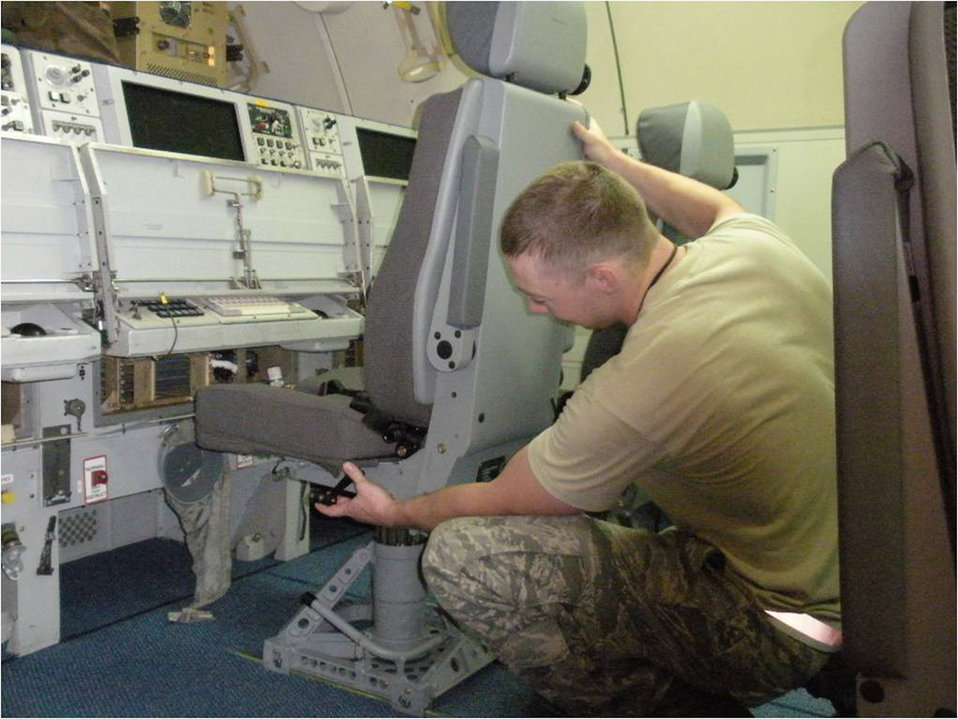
New ergonomic seats installed in E-3 fleet

A maintenance crewmember at Tinker Air Force Base, Okla., installs a new operator stations seat aboard an E-3 Sentry recently. The new seats are expected to help alleviate back and neck stress for crews on long-duration missions.